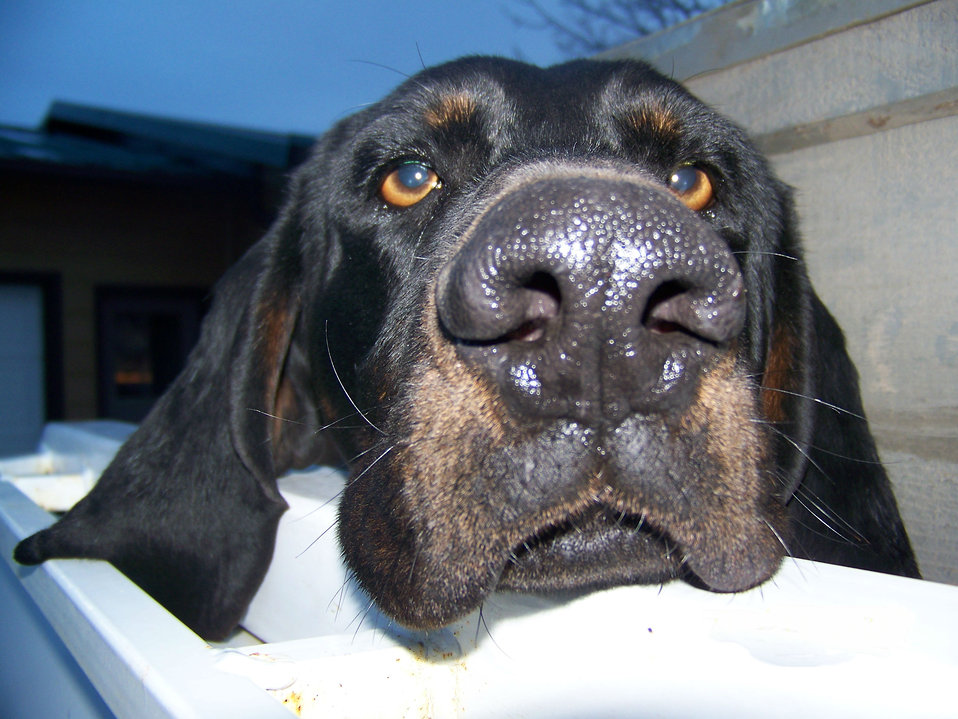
Lion Dog

This is Spice, a Black and Tan Hound, who helps track mountain lions for an ongoing study on CMR National Wildlife Refuge.